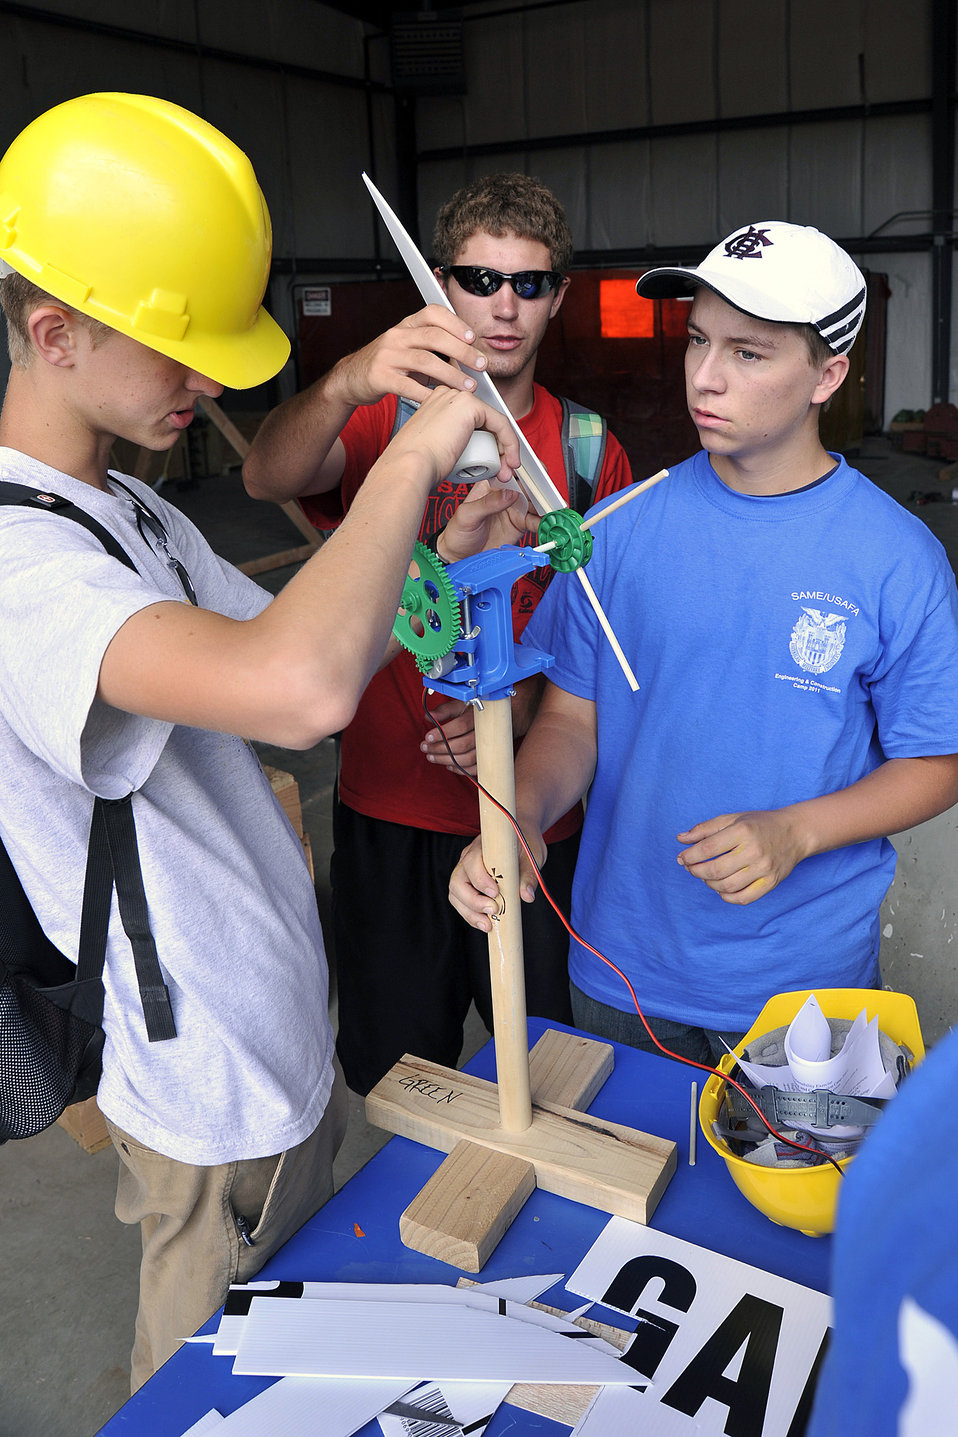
Engineering camp attracts, inspires students

High-school students assemble a wind-powered generator during a Society of American Military Engineers camp June 25, 2011, at the Air Force Academy.